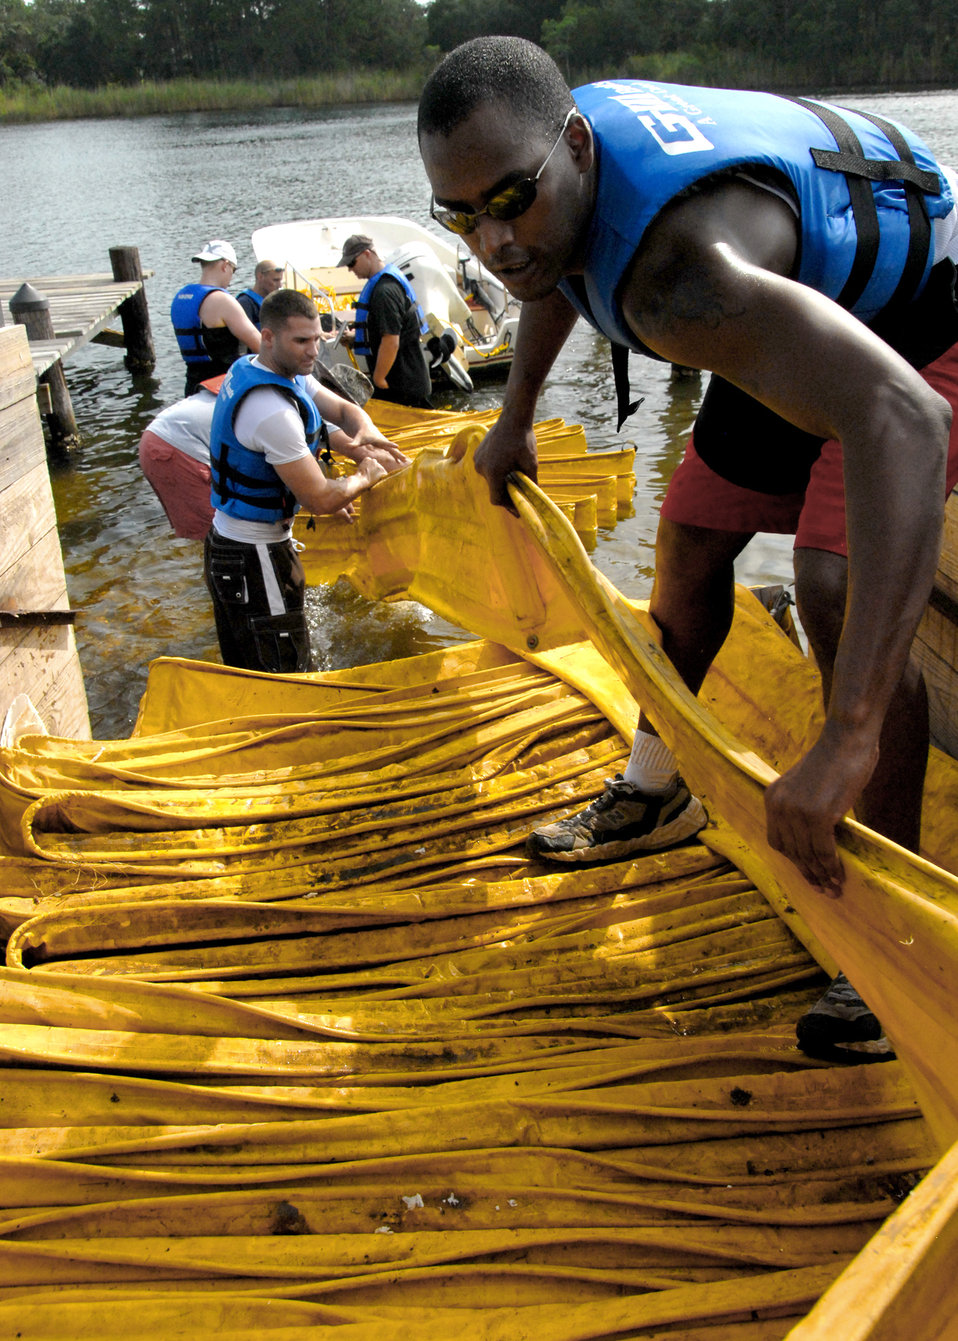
Elgin boom

Staff Sgt. Adam Elerson (right) and Airman 1st Class Brian Beauchamp pull boom out of a trailer July 14, 2010, at Eglin Air Force Base, Fla., where 600 feet of boom was used to protect the shoreline. Boom is an oil containment device used to trap oil in the water so it can be collected before reaching the shore. Seregeant Elerson and Airman Beauchamp are members of the 96th Aerospace Medicine Squadron.